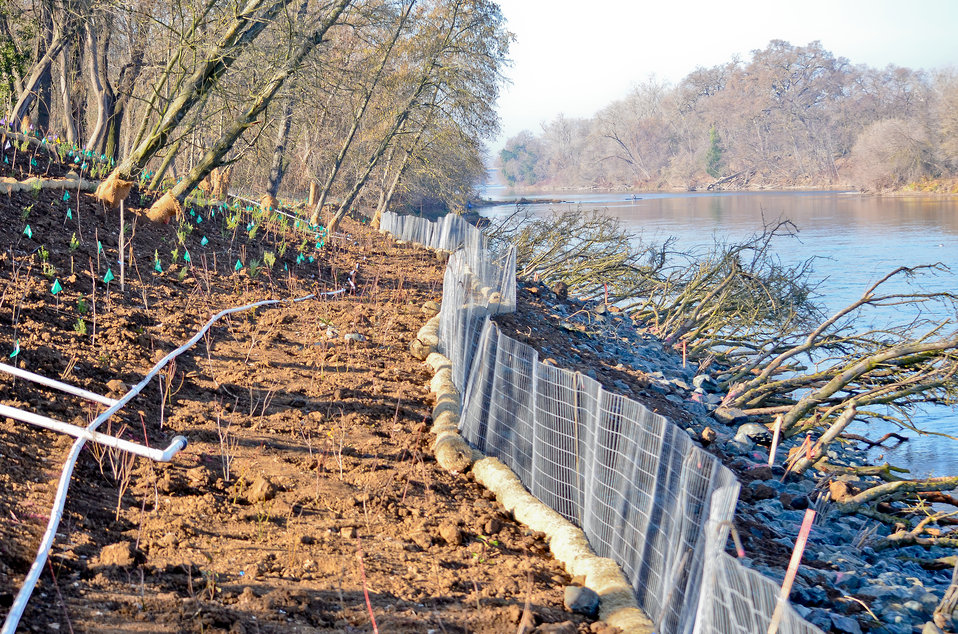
Habitat irrigation system and beaver barrier

An above-ground irrigation system (left), shown Jan. 4, 2012, will use river water to nourish a total of 6,785 plants at two erosion repair sites within one-half mile of each other in Sacramento, Calif.
The plants were placed more than 15 feet away from the levee to comply with U.S. Army Corps of Engineers safety standards for vegetation on levees, improving river habitat without compromising levee stability. The system will remain in place for at least three years, while a waist-high fence will guard against beavers and other animals until the plants can sustain themselves. It’s all part of the Sacramento River Bank Protection Project, a joint effort between the U.S. Army Corps of Engineers Sacramento District and Central Valley Flood Protection Board to reduce flood risk by maintaining levees and reducing stream bank erosion along the Sacramento River and its tributaries.